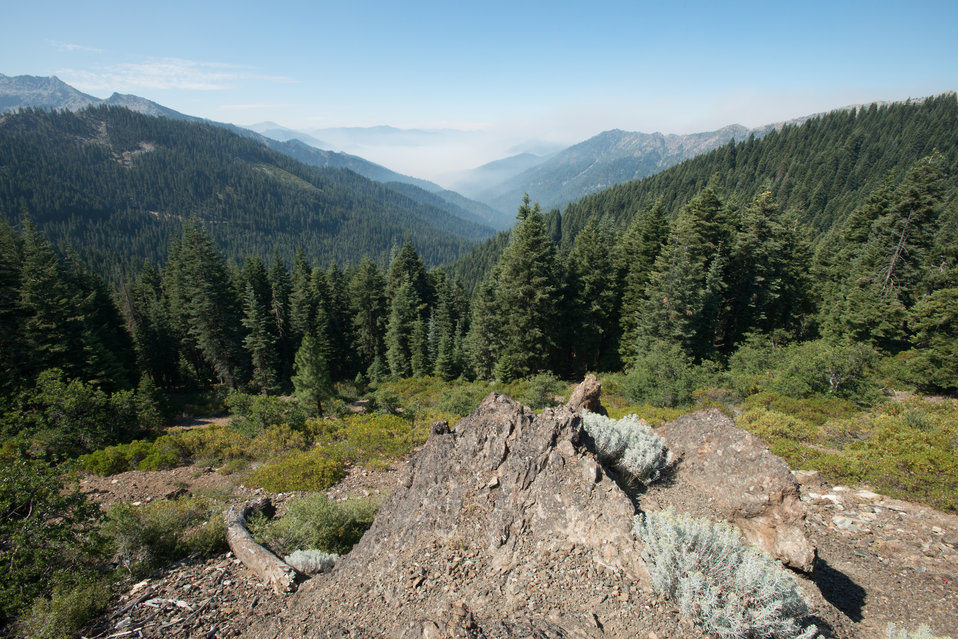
Klamath National Forest, site of the Salmon River Complex Wildlands Fire, northwest of Sawyers Bar and west of Etna and Yreka, CA, on Wednesday, Aug. 6, 2013.